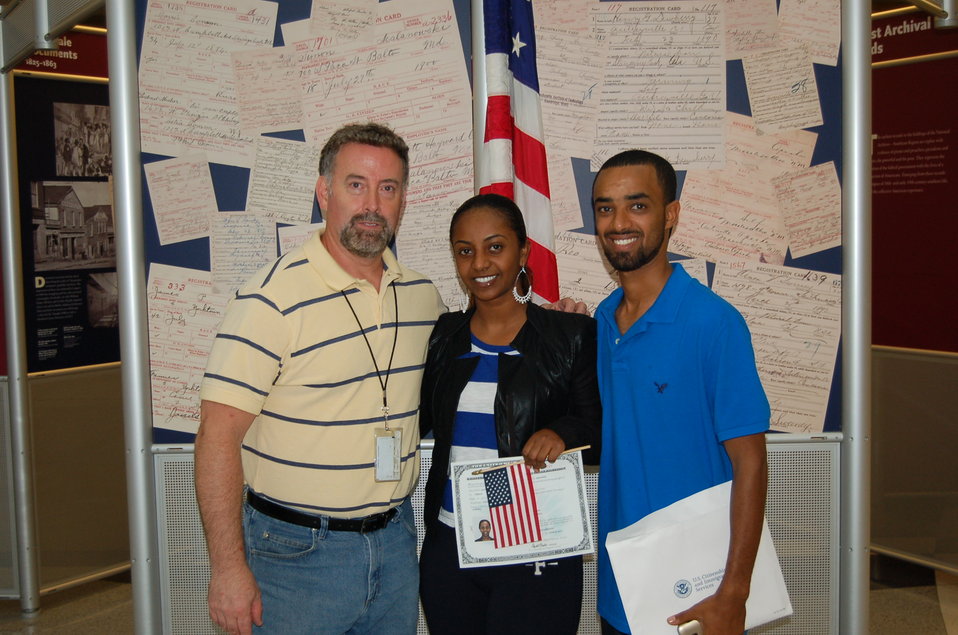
New Citizens